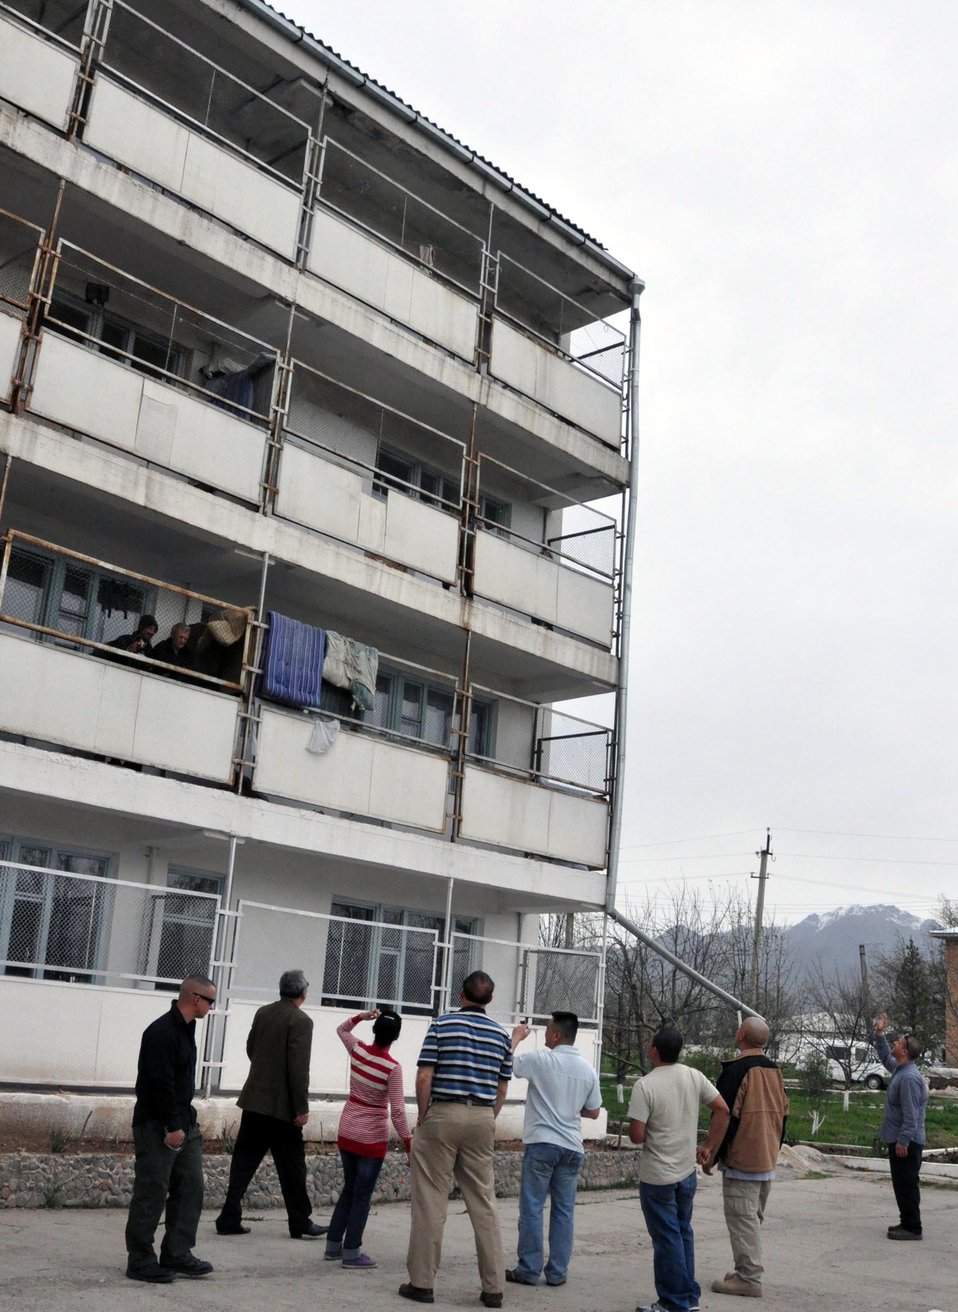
Airmen provide humanitarian assistance in Kyrgyz village

Airmen from the Transit Center at Manas, Kyrgyzstan, wave to patients on the second, third, and fourth floors of the Psychoneurologic Boarding House in Iskra Village, Kyrgyzstan, during a humanitarian assistance visit to bring food, clothing and entertainment items April 14, 2010. This boarding house hosts 255 male patients and is badly in need of repair and basic amenities. Airmen from the Transit Center at Manas visited to interact with patients and to see how they can help the boarding house in the future.